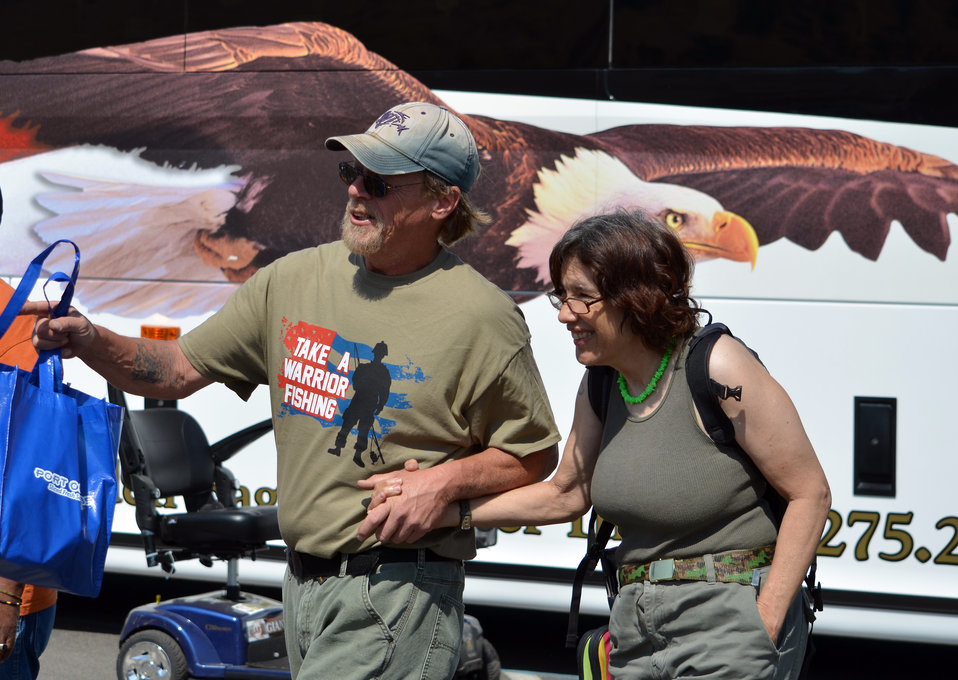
On wings of eagles (“Take a Warrior Fishing” event at Success Lake)

Volunteers from numerous civic groups helped wounded warriors and their families enjoy a day fishing during the 'Take a Warrior Fishing' event at Success Lake, located near Porterville, Calif., May 4, 2013. This is the second year the U.S. Army Corps of Engineers Sacramento District has hosted the event. Photo cropped for emphasis.